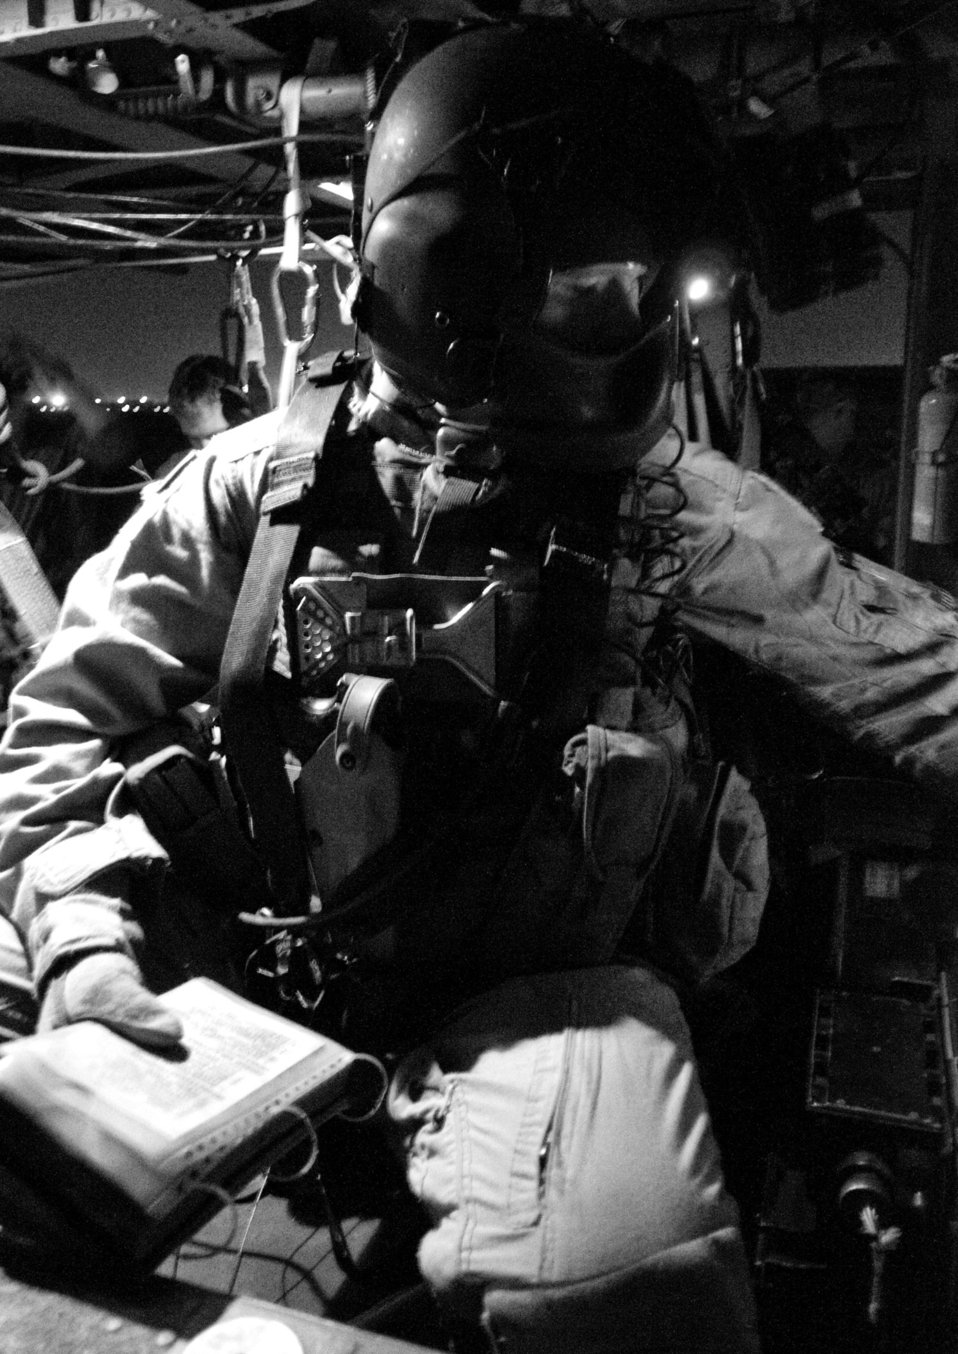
Nighttime operations

Airman 1st Class Devin Chesbro runs preflight checklists July 17 at Bagram Air Base, Afghanistan. Airman Chesbro is tasked with operational support to pilots as well as manning one of the two .50mm caliber machine guns. Airman Chesbro is a 33rd Expeditionary Rescue Squadron flight engineer deployed from Kadena AB, Japan.